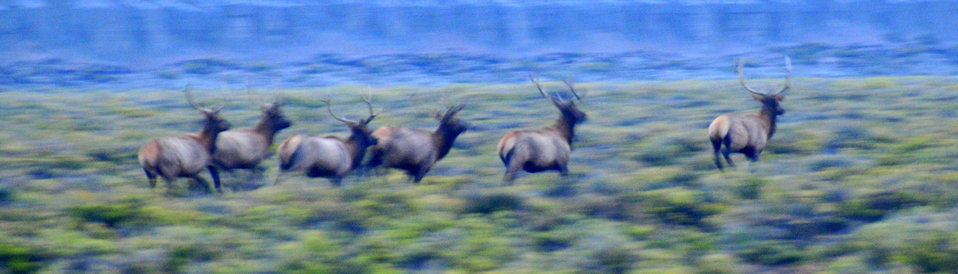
Bull Elk Slipping Away Before Sunrise at Seedskadee National Wildlife Refuge

A group of bull elk caught slipping away before sunrise to more remote parts of Seedskadee National Wildlife Refuge.